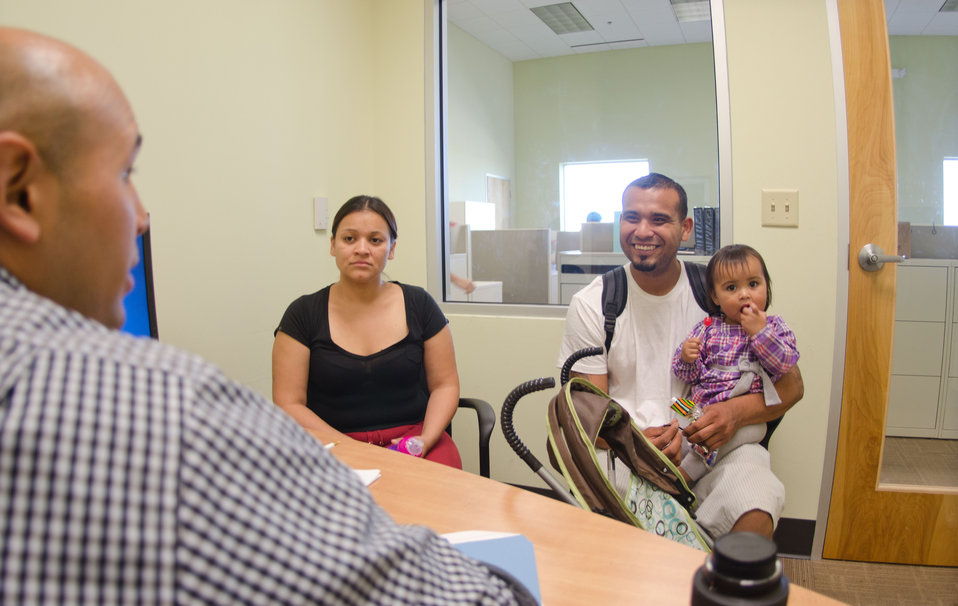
“You should never be too prideful to ask for assistance …” said Olivia Hernandez (second from left), on Monday, October 31, 2011, in the San Antonio Food Bank (SAFB) Outreach Office, when asked about what others should keep in mind when faced with a crisis such as the one Cesar Trevino (second from right), daughter Lana (right, 1 yr. old) and she did the prior evening, when a distant apartment unit caught fire, spreading smoke and flames throughout the building, eventually consuming their Texas apartment as well. Left with the clothes they are wearing they were referred to the San Antonio Food Bank where they sat down with Outreach Specialist Seth Villalobos (left) who listened and determined what their immediate needs were. Villalobos talked about the programs that could address their needs, and benefits that could help them rebuild their lives. During this initial visit, they applied for Children’s Medicaid and Women, Infants & Children (WIC) benefits, later they were briefed about the United States Department of Agriculture’s Supplemental Nutrition Assistance Program (SNAP) and the Federally funded, state administered Temporary Assistance for Needy Families Benefits (TANF) as well as other Federal and State programs. At the end of their meeting Hernandez said, “It was super-easy, very friendly staff.” And Trevino added, “great service.” Later that day, Villalobos made a personal trip to this family’s temporary home to deliver a box of groceries to make their first evening a little easier. In the box were provisions from the USDA and other contributors to SAFB.
San Antonio Food Bank is a non-profit organization that serves as a clearinghouse receiving and storing truckloads of donated food, produce, and other grocery. SAFB distribute these items to over 500 service agencies that help people in need.
“We couldn’t do what we do without our partnership with USDA’” said President and CEO Eric Cooper. SAFB serves 16 counties in Southwest Texas and states, “Nearly one out of every four children and one out of every five adults in Southwest Texas lives in poverty and has difficulty meeting basic nutritional needs.” According to SAFB, sixty-five percent of the people requesting emergency food have children. USDA photo by Lance Cheung.
www.fns.usda.gov/fns/
www.fns.usda.gov/snap/ www.fns.usda.gov/fdd/programs/tefap/